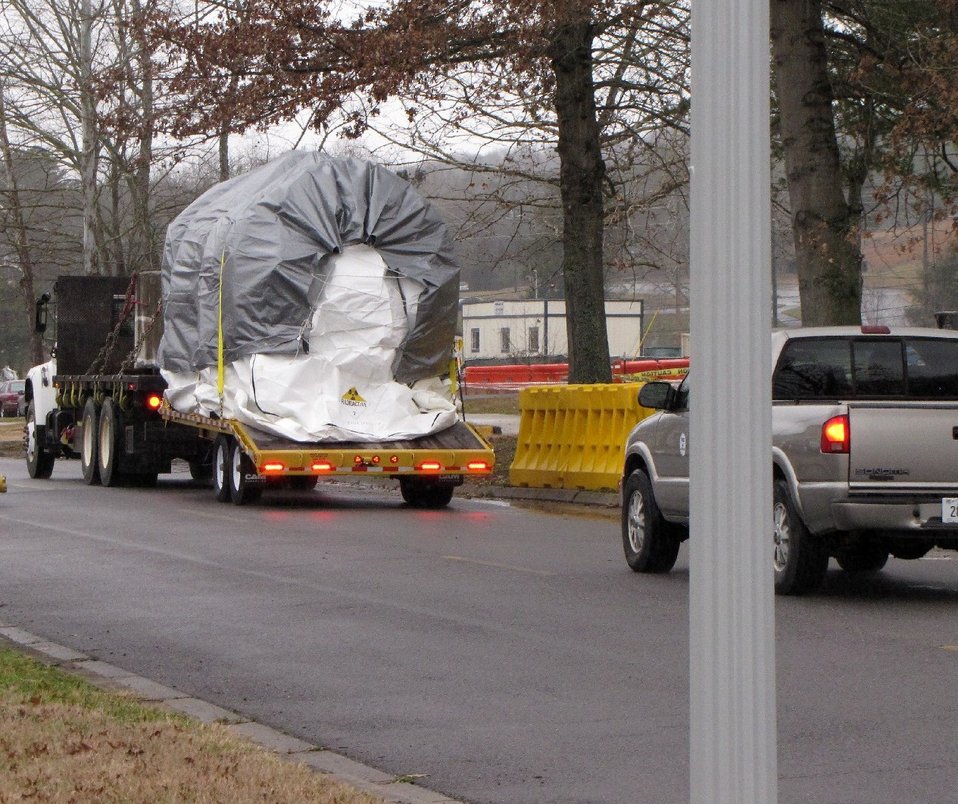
Oak Ridge Removes Lab’s Greatest Source of Groundwater Contamination

The 6,500-pound Tank W-1A is shipped away from ORNL.

The high-priority EM cleanup project involved extensive characterization, removal of contaminated soil and excavation of the 4,000-gallon stainless steel tank.